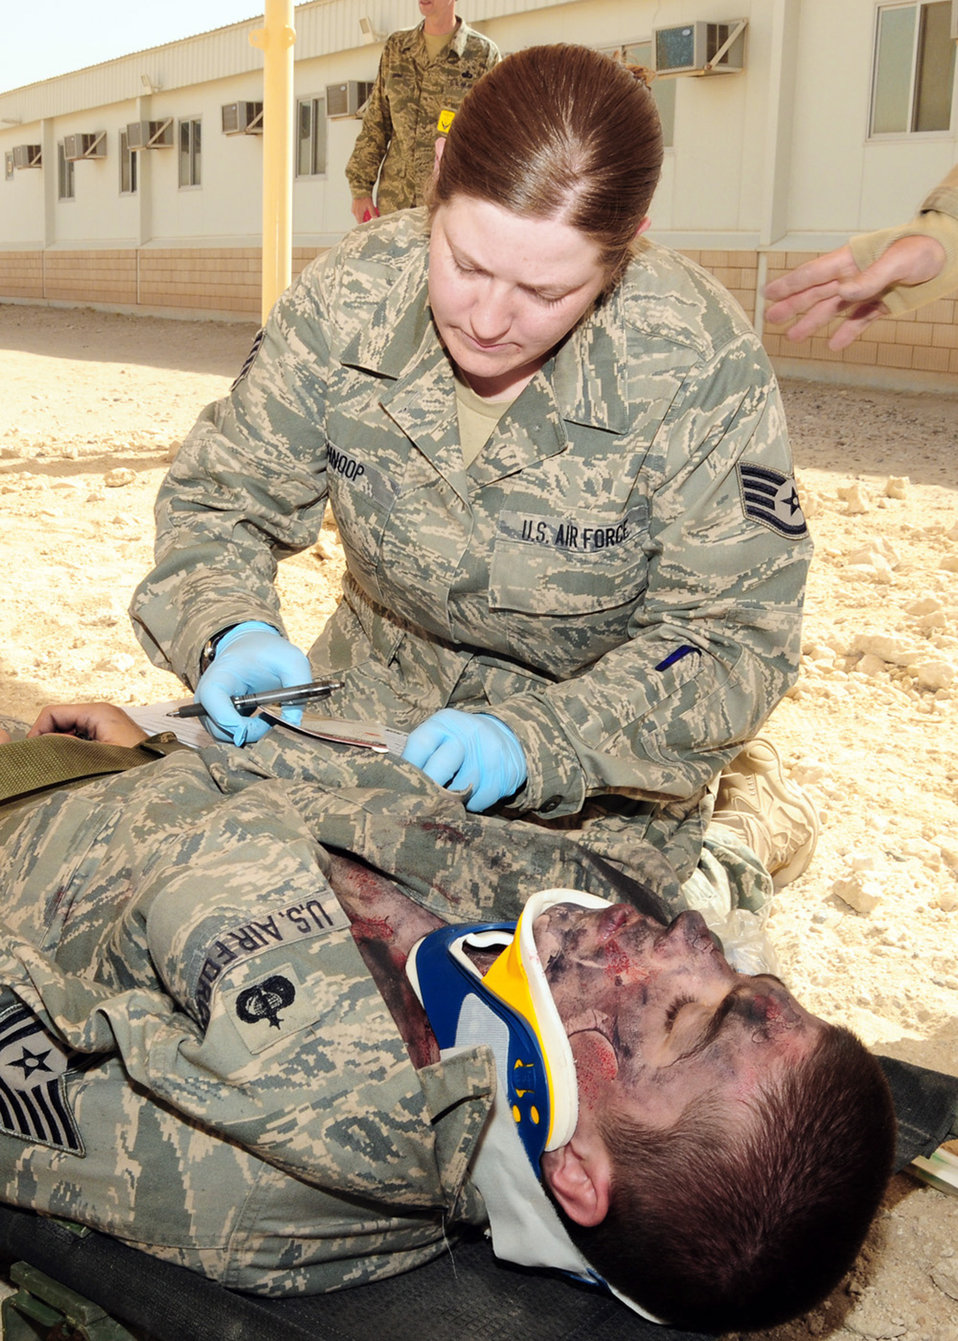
386th AEW conducts dorm fire exercise

Staff Sgt. Betty Schnoop completes a triage tag for simulated burn victim during a dorm fire exercise June 22 at an air base in Southwest Asia. A triage tag has three basic categories: a tear off section to label the severity of the patient's injury and status, main body for the patient assessment and peel off sticker to identify what transportation and treatment the patient received. Sergeant Schnoop is assigned to the 386th Expeditionary Medical Group.